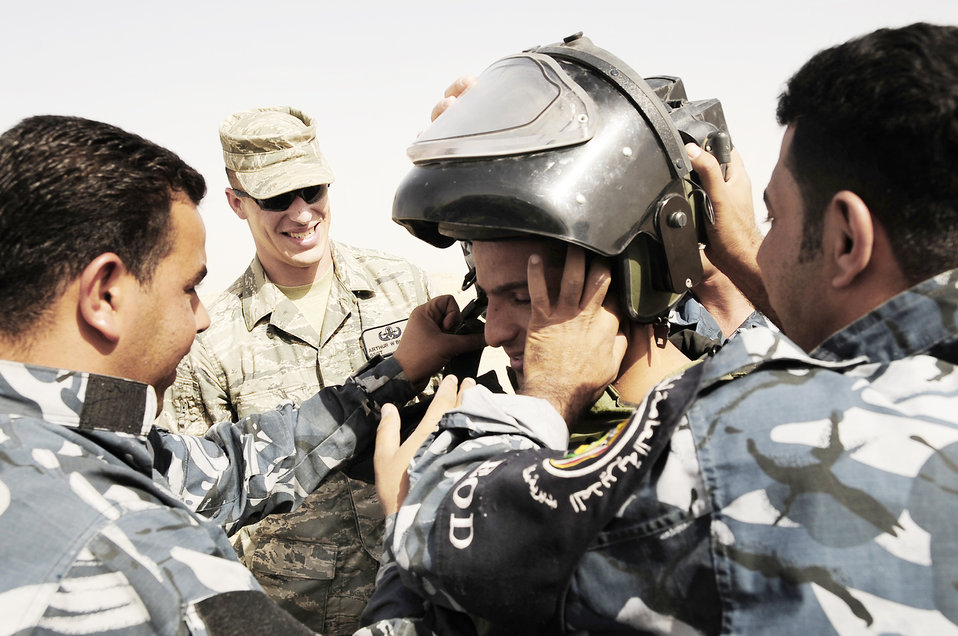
Airmen train Iraqi police

Staff Sgt. Arthur Bigelow assists Iraqi police explosive ordnance disposal technicians get a team member into a bomb suit during a training scenario conducted by Air Force EOD members Nov. 4, 2009, at Forward Operating Base Cedar, Iraq. Sergeant Bigelow is a 407th Expeditionary Civil Engineer Squadron EOD technician deployed from Fairchild Air Force Base, Wash.